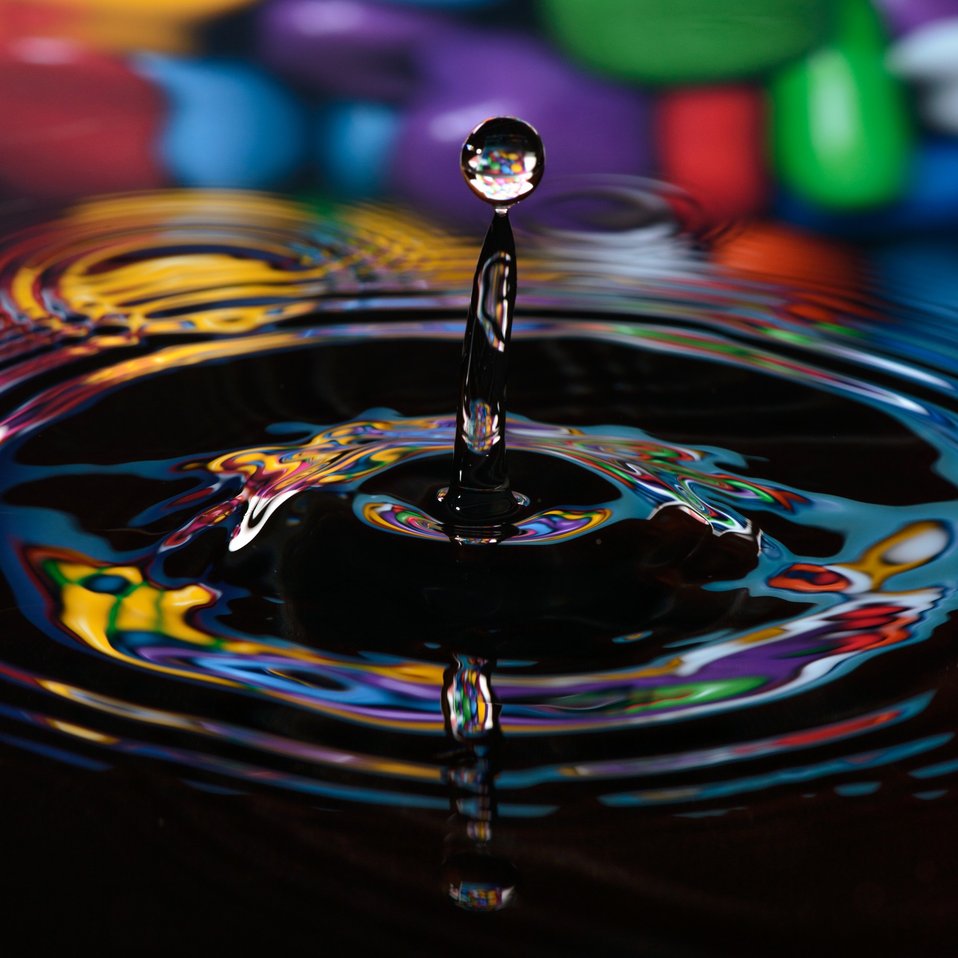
Drop 1

Drop on the way up.